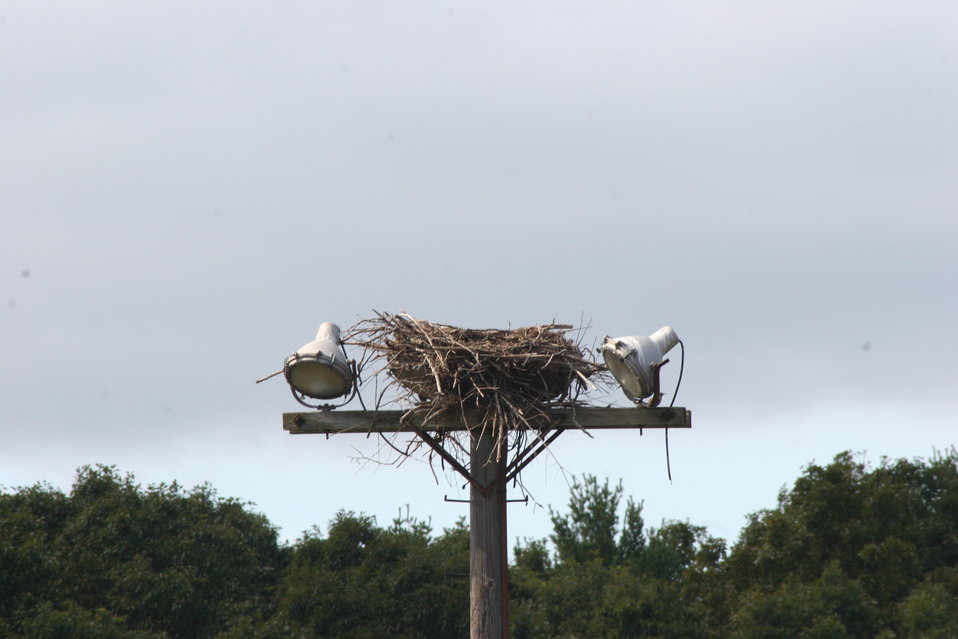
Osprey nest on light tower at Great Bay National Wildlife Refuge, Newington, NH.